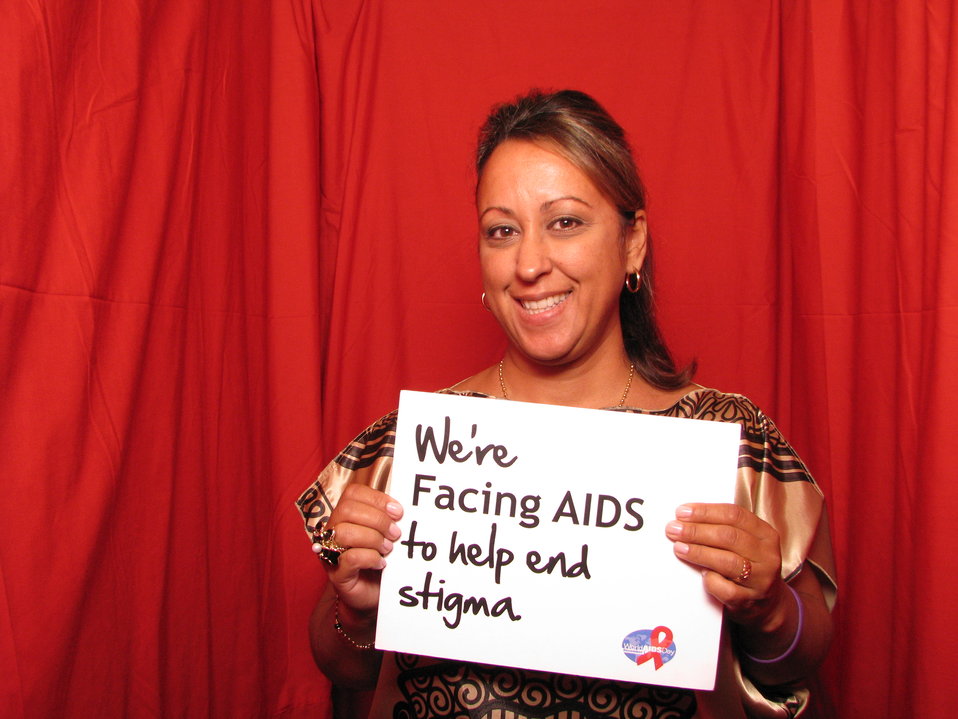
We're FACING AIDS to help end stigma.

From the AIDS.gov photo booth at the U.S. Conference on AIDS, September 2010 (Orlando, FL).